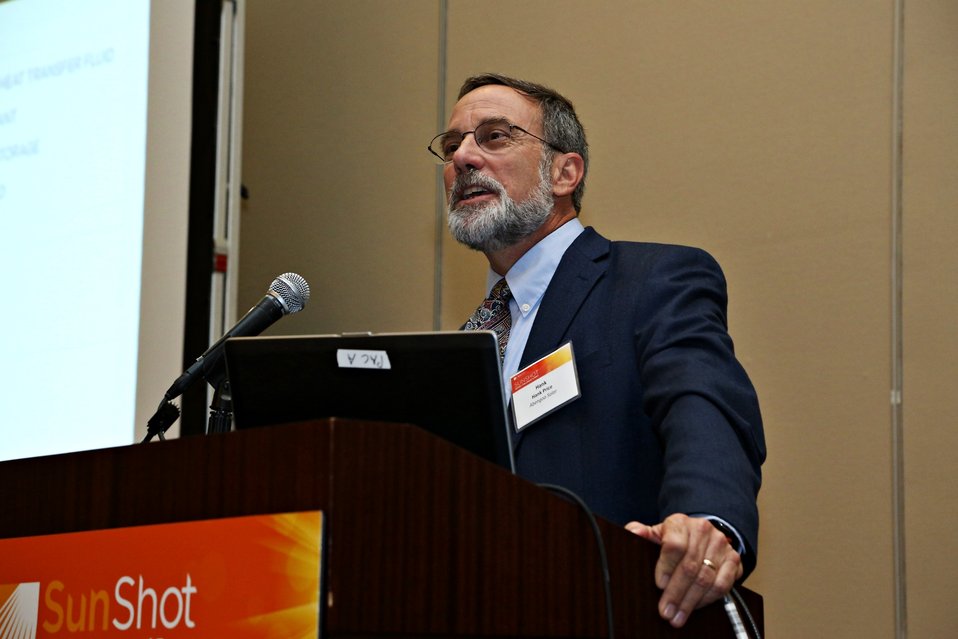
Breakout Sessions 8